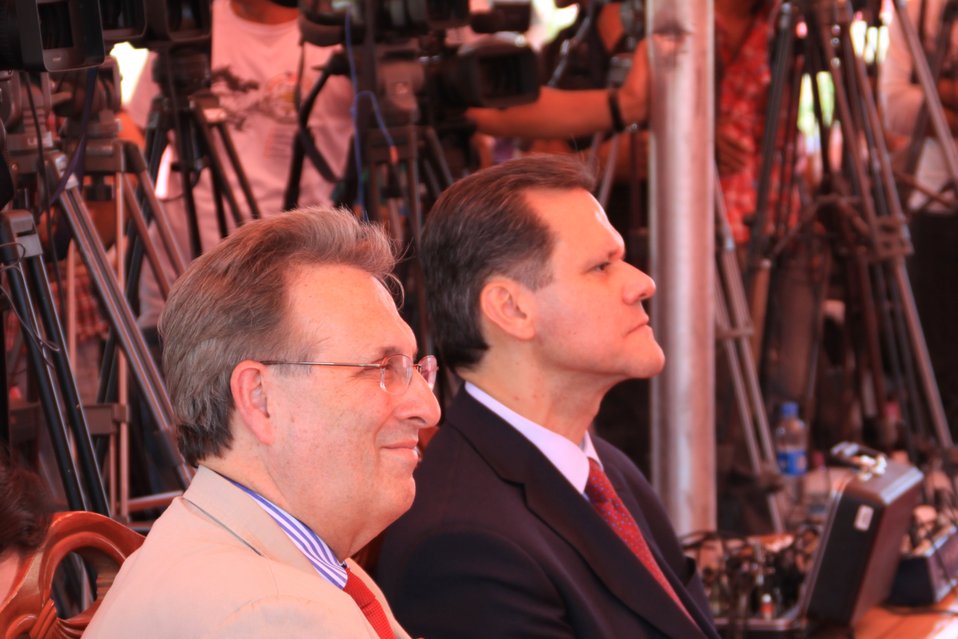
Badam Bagh Farm